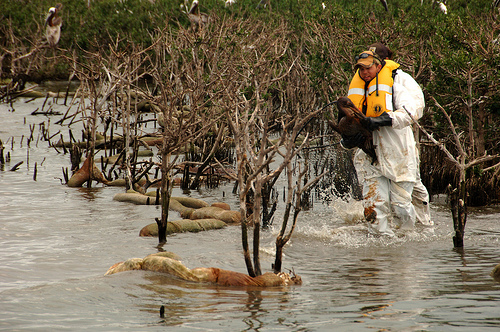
Tim Kimmel, USFWS, Rescues Oiled Pelican in Barataria Bay, La.

JEFFERSON PARISH, La.-Tim Kimmel of the U.S. Fish and Wildlife Service carries an oiled pelican from a nesting area in Barataria Bay, La., June 5, 2010, to a waiting boat. The pelican was successfully transported to a stabilization center on Grand Isle, La., before being taken to the Fort Jackson Oiled Wildlife Rehabilitation Center at Venice, La., for cleaning. Coast Guard Photo by Petty Officer 2nd Class John D. Miller.